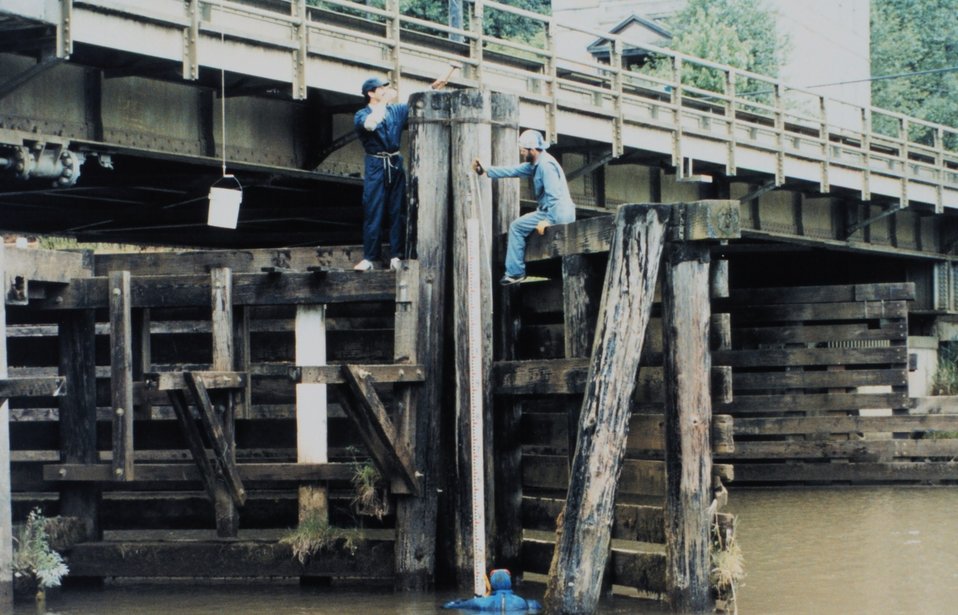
The tide staff at Skamokawa - a ghost town on the Lower Columbia River